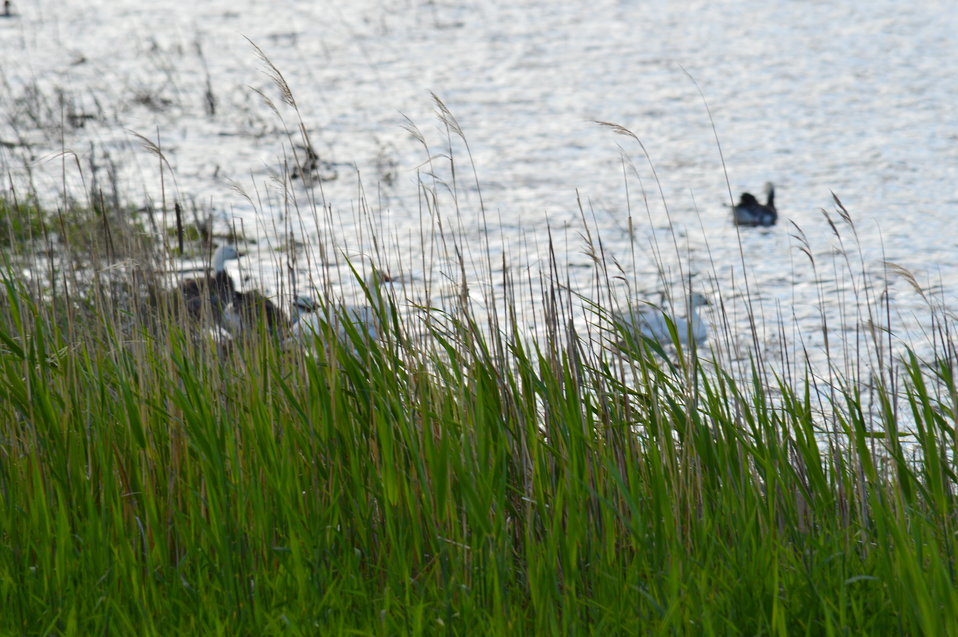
Snow geese in the grasses at Sand Lake

Scenery and wildlife at Sand Lake National Wildlife Refuge in South Dakota